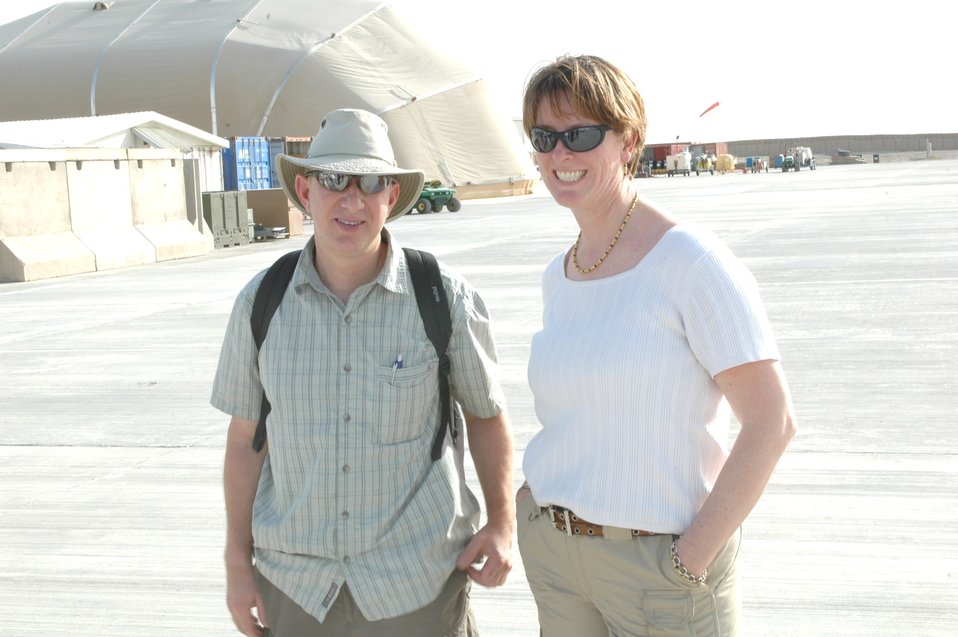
Dr Shah Visits Argandab April 10, 2010